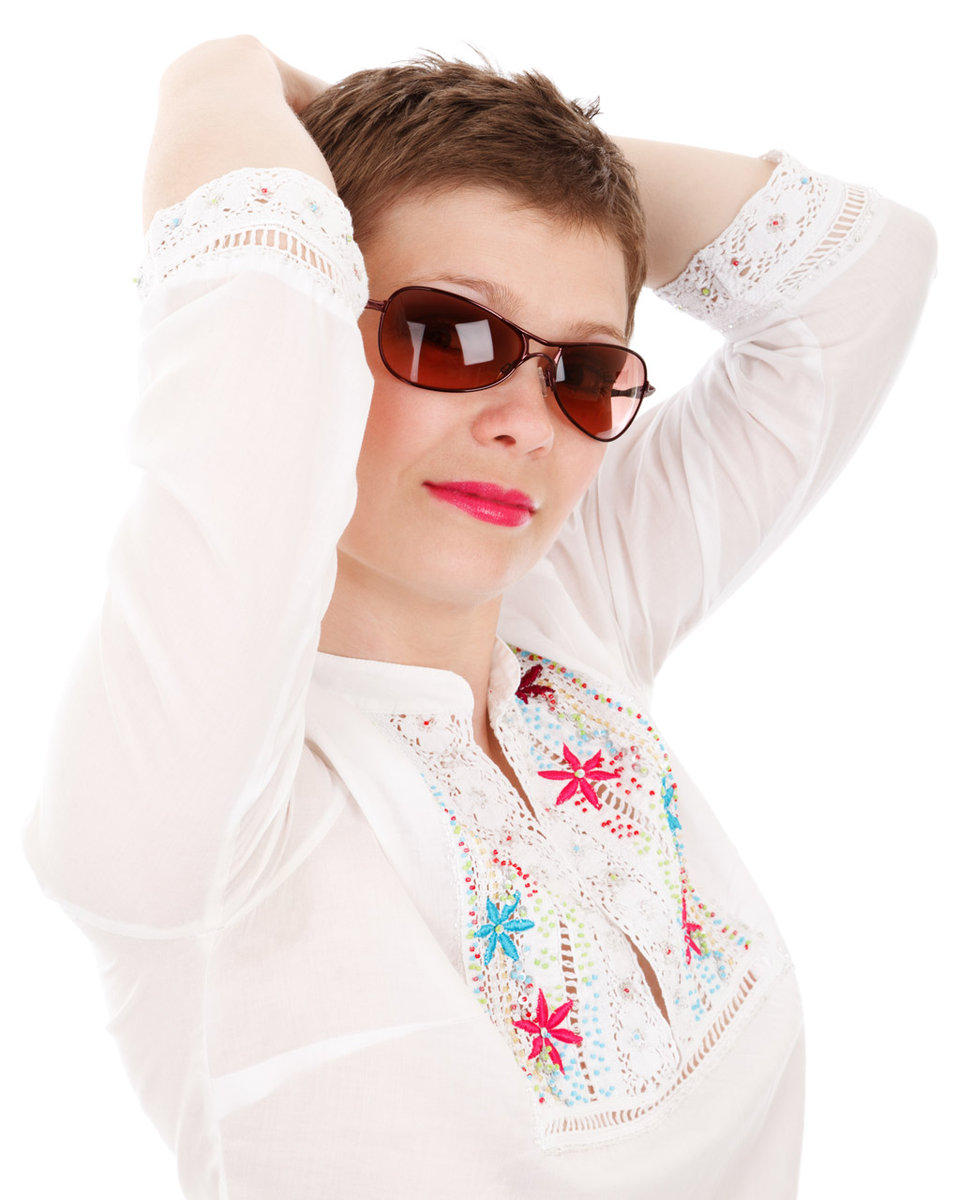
Fashion girl with sunglasses

Fashion girl wearing summer clothes with sunglasses isolated on white background.